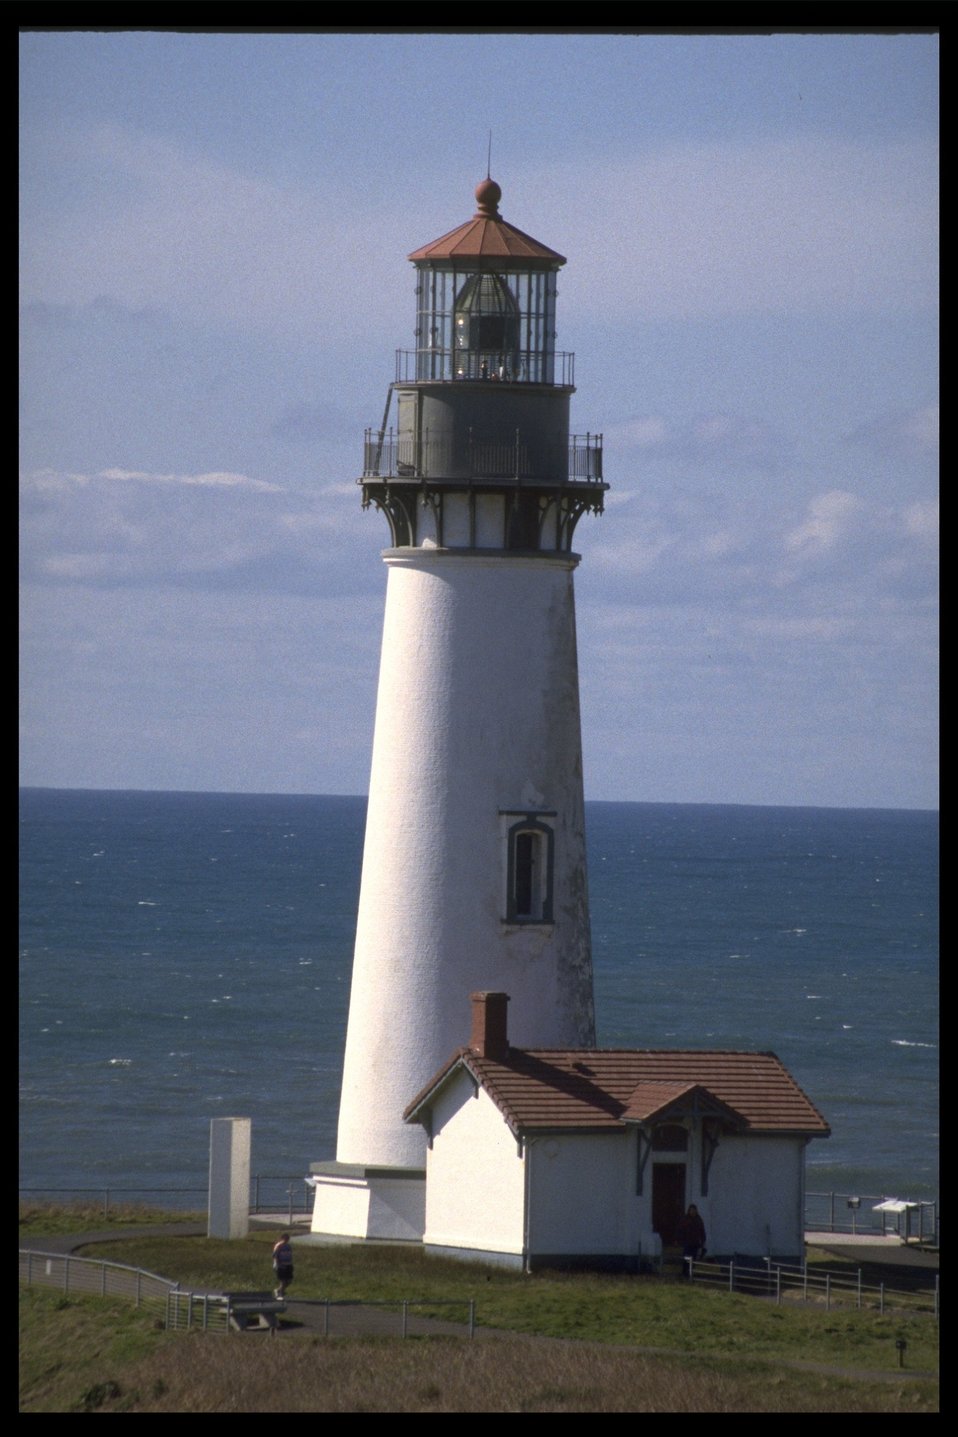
Yaquina Head Lighthouse.